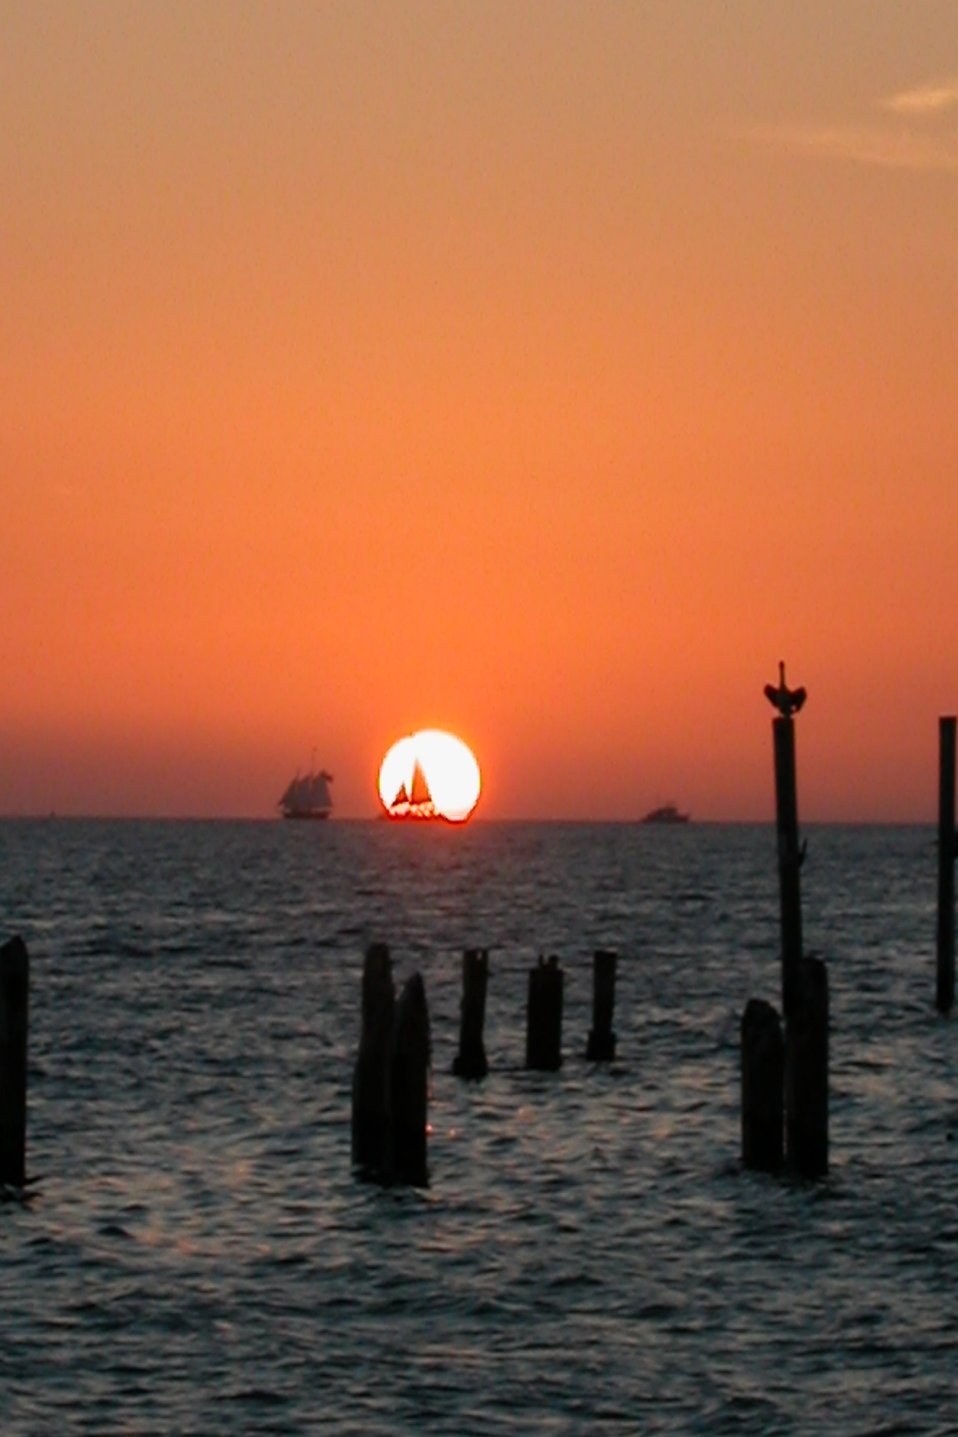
Red sails in the sunset #3.